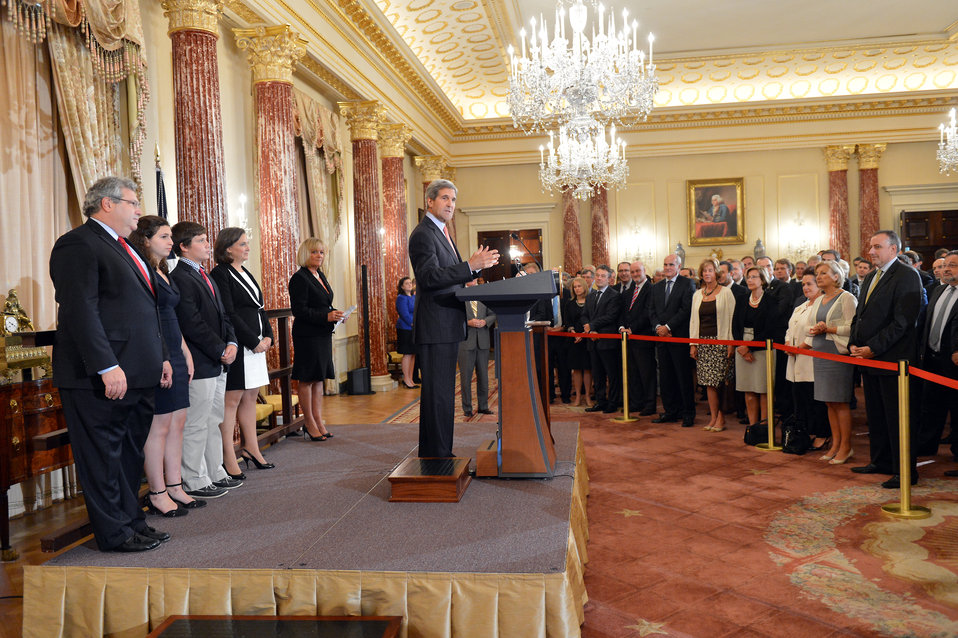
Secretary Kerry Hosts a Swearing-In Ceremony for Assistant Secretary Nuland

U.S. Secretary of State John Kerry hosts a swearing-in ceremony for Victoria Nuland as Assistant Secretary of State for European and Eurasian Affairs at the U.S. Department of State in Washington, D.C., on September 18, 2013.